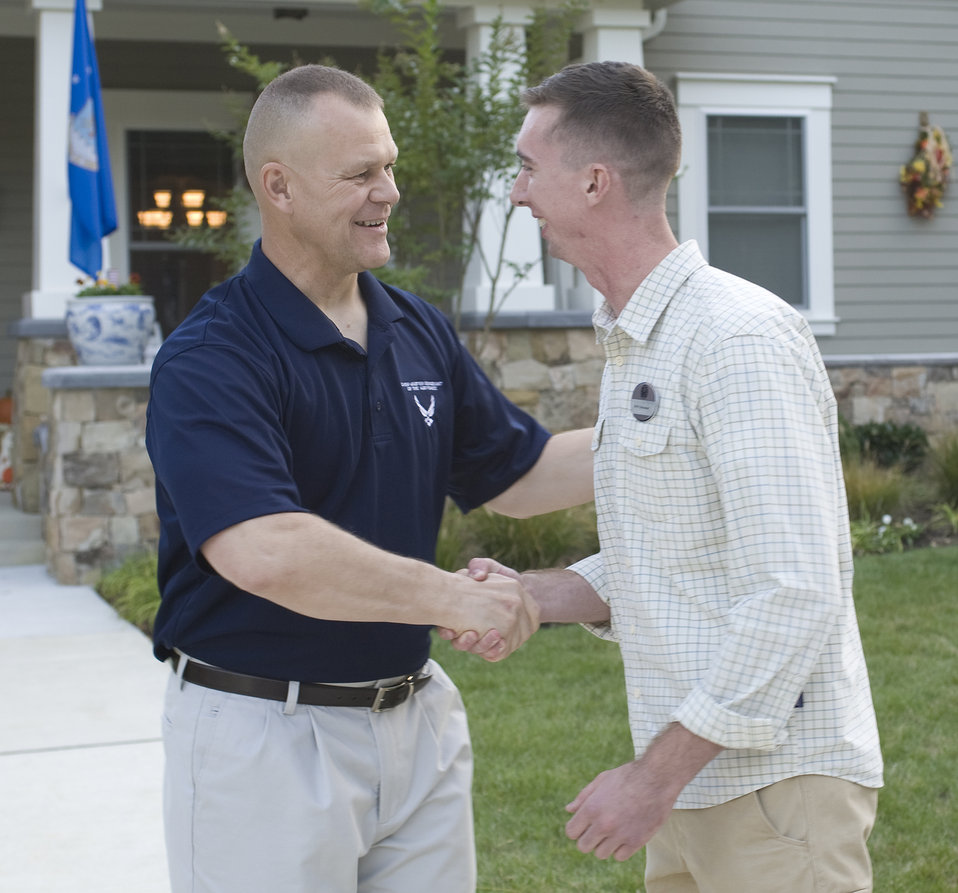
Social starts week celebrating outstanding Airmen

Chief Master Sgt. of the Air Force James Roy (left) congratulates Senior Airman Samuel Siewert, one of the 12 Outstanding Airmen of the Year, Sept. 11, 2010, at Airey House on Andrews Air Force Base, Md. Chief Roy hosted a social in honor of the Airmen. This awards program began in 1956. Each year the program recognizes 12 enlisted Airmen for their superior leadership, job performance, community involvement and personal achievements.